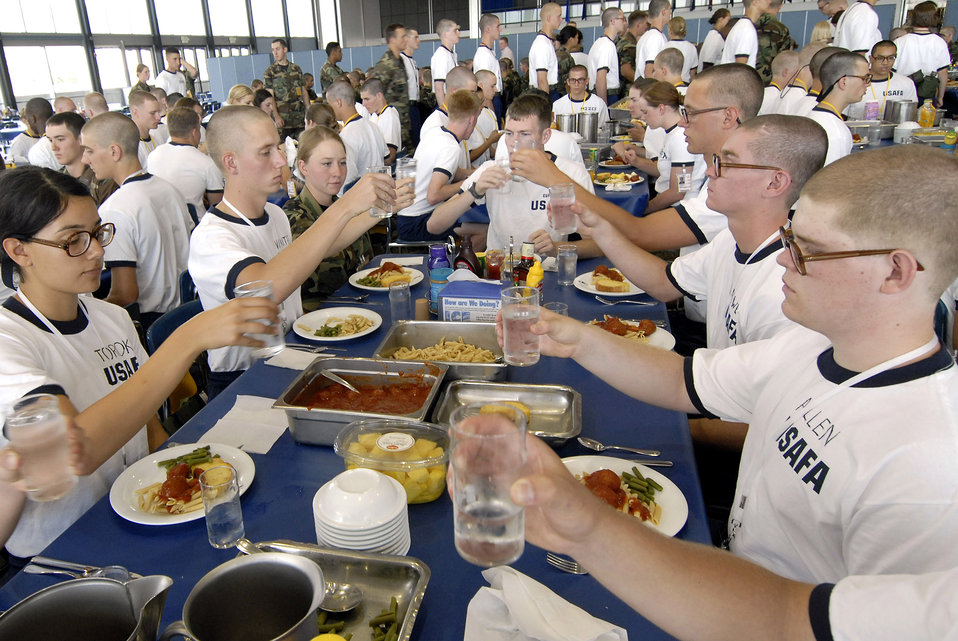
Eyes on the eagle

Basic cadet trainees make a toast during their first lunch since arriving as the Class of 2011 June 29 at the U.S. Air Force Academy in Colorado. The cadets are in their first week of training and must not take their eyes off the eagle on their plate as they eat. They are in the first half of basic cadet training, commonly known as